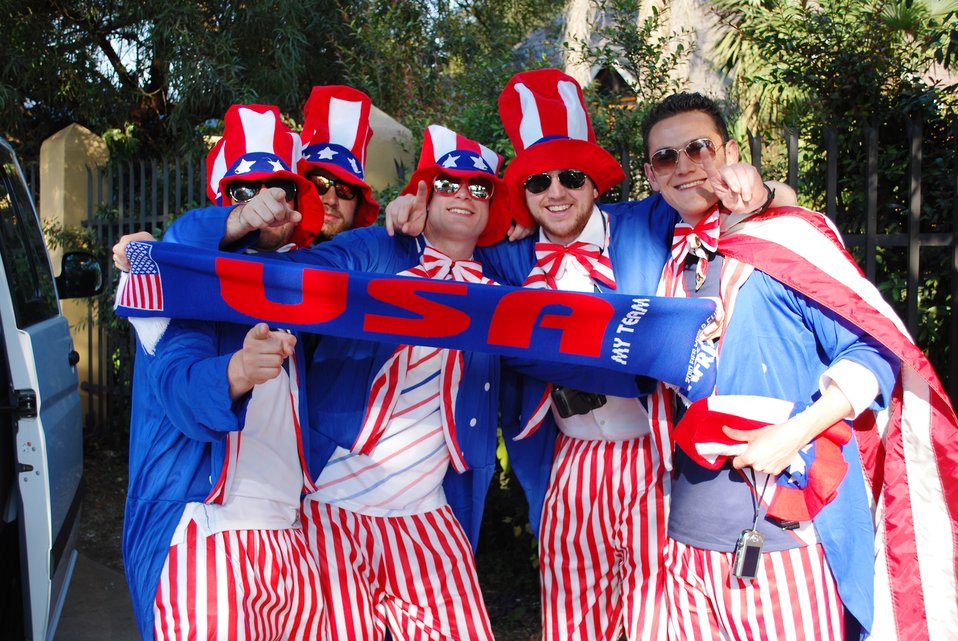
Team USA fans show their spirit before the U.S. vs. Algeria World Cup soccer match at Loftus Versfeld Stadium in Pretoria, South Africa, on June 23, 2010.